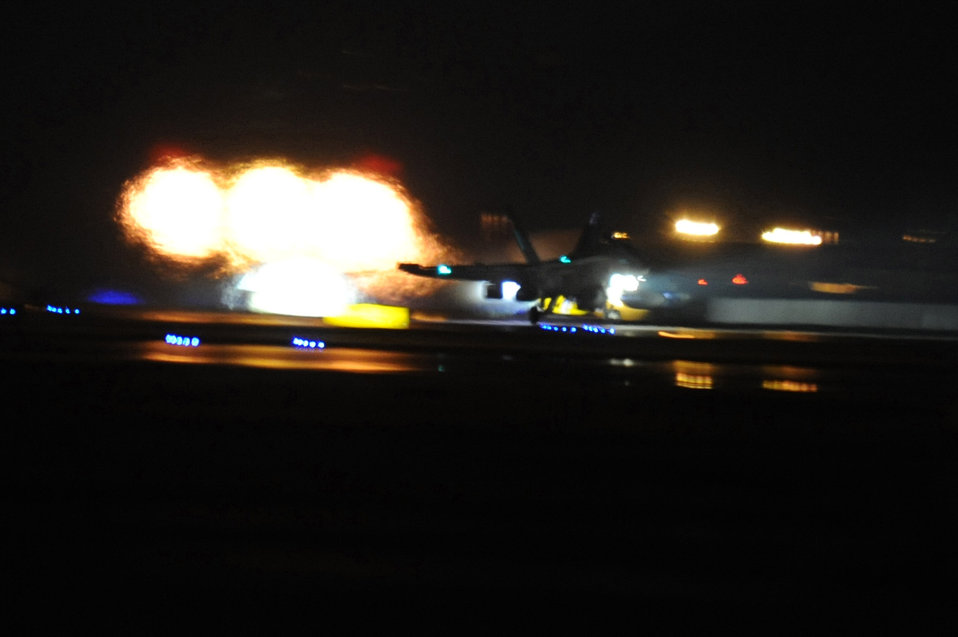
Joint Task Force Odyssey Dawn

A U.S. Navy EA-18G Growler takes off from Aviano Air Base, Italy, Mar 20, 2011, in support of the initial phase of Operation Odyssey Dawn. Joint Task Force Odyssey Dawn is the U.S. Africa Command task force established to support the larger international response to the unrest in Libya. A broad coalition of nations are partnering to enforce U.N. Security Council Resolution (UNSCR) 1973, which authorizes all necessary means to protect civilians in Libya under threat of attack by Qadhafi regime forces. JTF Odyssey Dawn is commanded by Admiral Samuel J. Locklear, III.